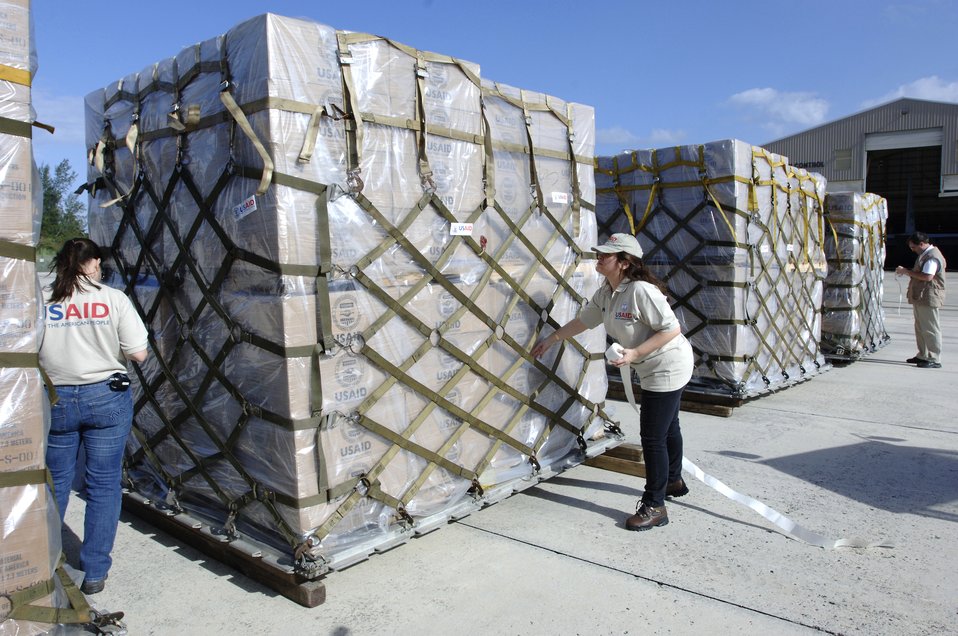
Flooded Bolivia gets humanitarian relief

Personnel from the United States Agency for International Development place identifying stickers on humanitarian supplies March 4 in San Juan, Puerto Rico. U.S. Southern Command, in cooperation with USAID, is delivering humanitarian supplies in response to devastating floods in eastern Bolivia.